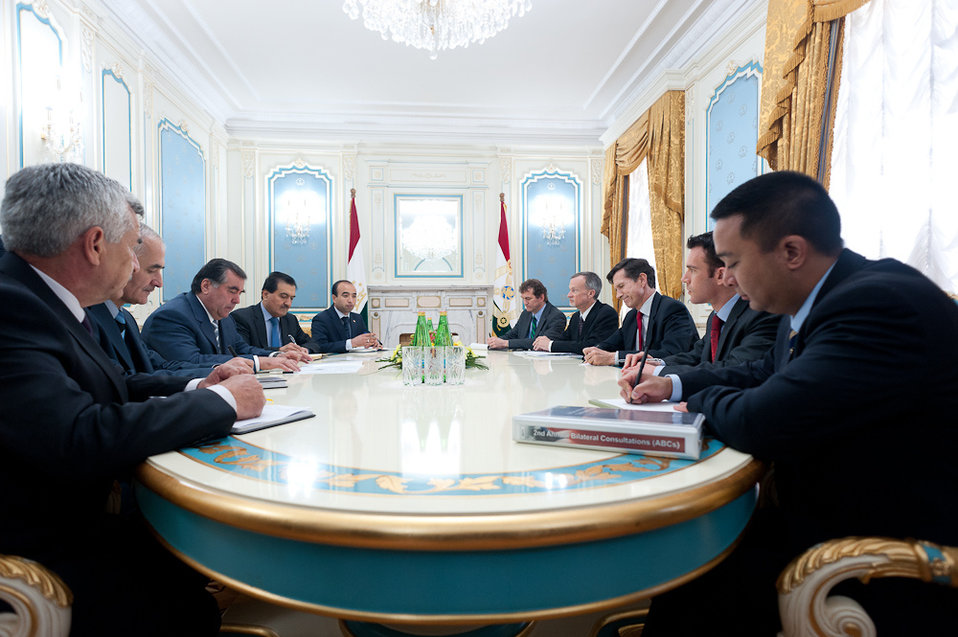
Assistant Secretary Blake Leads U.S. Government-Interagency Delegation to U.S.-Tajikistan Annual Bilateral Consultations

U.S. Assistant Secretary of State for South and Central Asian Affairs, Robert O. Blake, Jr. leads the U.S. government-interagency delegation to the second U.S. - Tajikistan Annual Bilateral Consultations in Dushanbe, Tajikistan, April 11 - 12, 2011. [Damian Wampler/ State Department photo/ Public Domain]